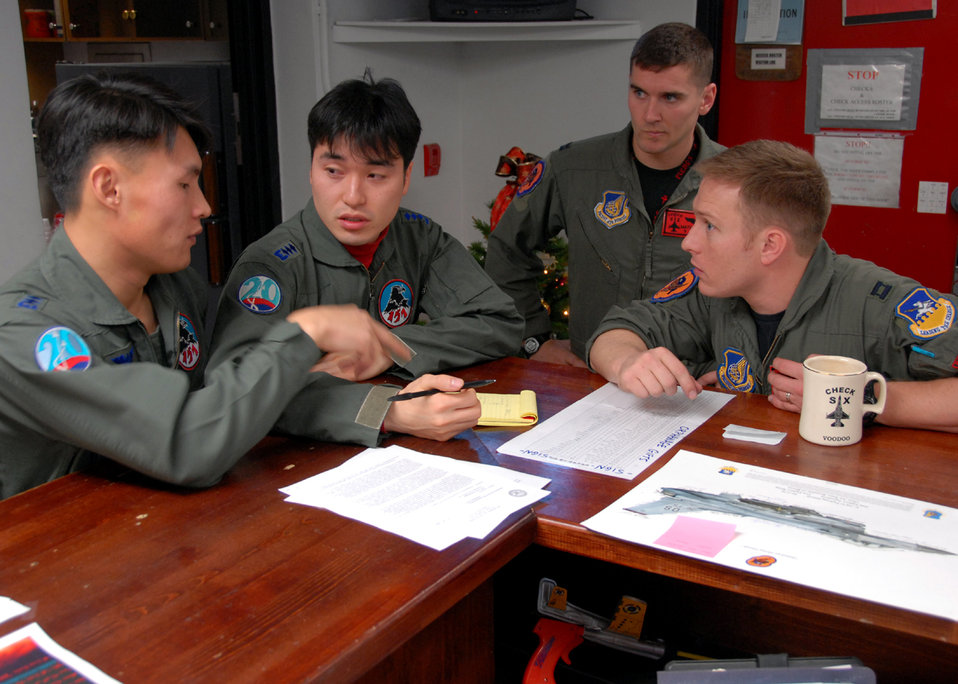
Airmen participate in buddy wing program

Capt. Jeong-Ho Cho (left), and Capt. Young-Kwon Ko (second from left) both KF-16C Fighting Falcon pilots assigned to the 157th Tactical Fighter Squadron, Seosan Air Base, Republic of Korea air force, conduct flight planning with Capt. William Bolton and Capt. Paul Davidson (right) both F-16C Fighting Falcon pilots assigned to the 36th Fighter Squadron, during the buddy wing program Dec. 11 to 13. The purpose of the Buddy Wing program is to exchange ideas, introduce tactics and improve interoperability between the U.S. and Republic of Korea Air Forces.